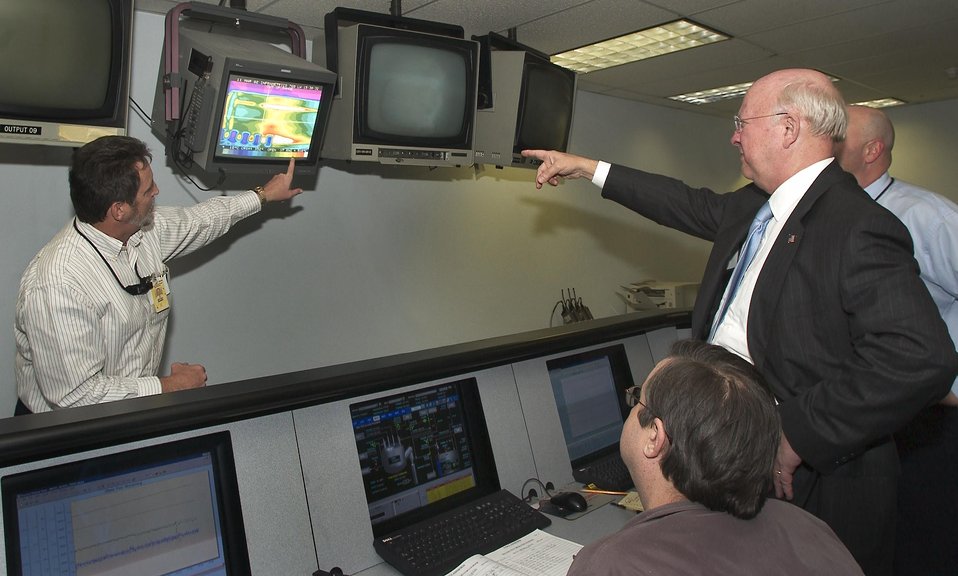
SECRETARY OF ENERGY BODMAN OBSERVING A REMOTE OPERATIONS PROCESS AT THE DEFENSE WASTE PROCESSING FACILITY.

THE SAVANNAH RIVER SITE'S DEFENSE WASTE PROCESSING FACILITY NEAR AIKEN, S.C., IS THE WORLD'S LARGEST RADIOACTIVE WASTE VITRIFICATION FACILITY. THE PURPOSE OF DWPF IS TO IMMOBILIZE APPROXIMATELY 37 MILLION GALLONS OF HIGH LEVEL RADIOACTIVE WASTE FROM UNDERGROUND TANKS AT THE SRS. THE HIGH LEVEL WASTE IS VITRIFIED INTO A DURABLE BOROSILICATE GLASS, POURED INTO STAINLESS STEEL CANISTERS AND STORED PRIOR TO EVENTUAL DISPOSAL IN A GEOLOGIC REPOSITORY.